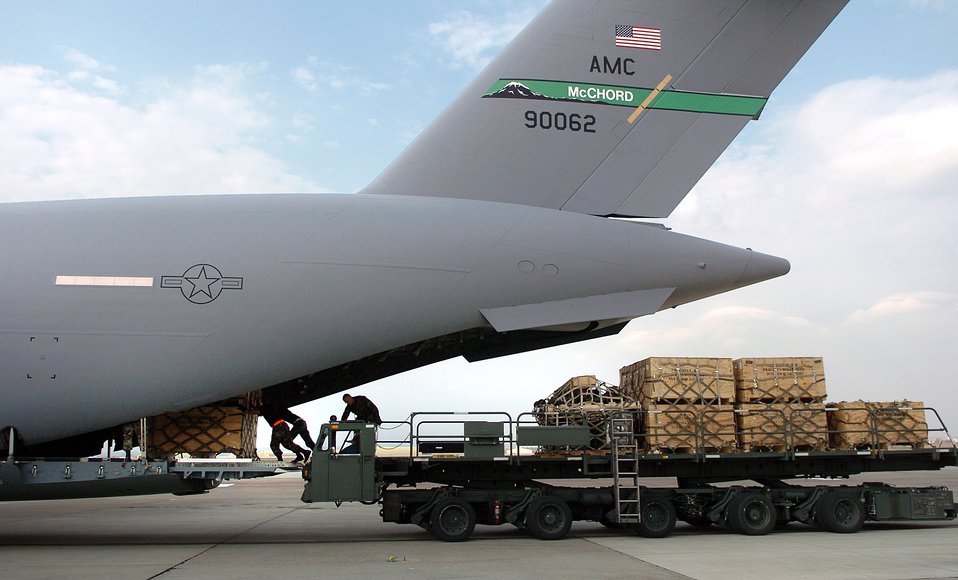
Incirlik AB

Airmen from the 728th Air Mobility Squadron load a C-17 Globemaster III at Incirlik Air Base, Turkey, Nov. 13. Over half of all air cargo delivered to support Operation Iraqi Freedom is processed through here. By flying critical supplies via Globemaster from this eastern Turkey air base directly to troops at remote locations in Iraq, more than 3,300 convoy truck missions and 9,000 servicemembers supporting the convoys are taken off Iraq roads each month.